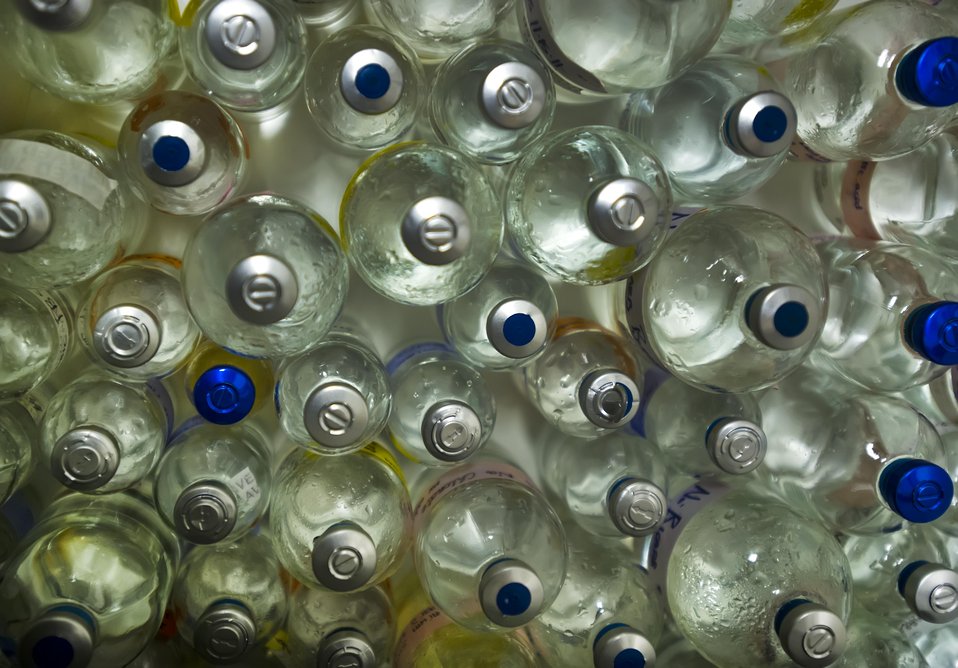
Shown are glass bioreactors and anaerobic chamber- research for enigma (ecosystems and networks integrated with genes and assemblies) at Lawrence Berkeley National Laboratory.